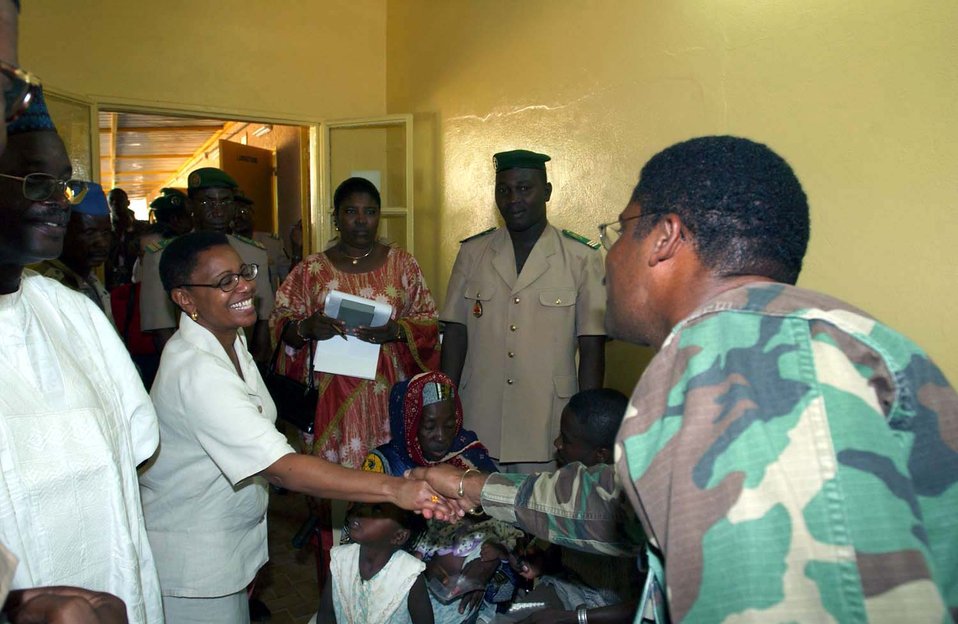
Ambassador visits reservisits

CAMP TONDIBIAH, Niger -- The U.S. Ambassador to Niger, Gail Denise Mathieu, greets Capt. Andrew Gibson during a visit to a local clinic here. The ambassador was visiting the medical team of 12 Air Force reservists working with the Niger military to provide medical assistance to the villagers.